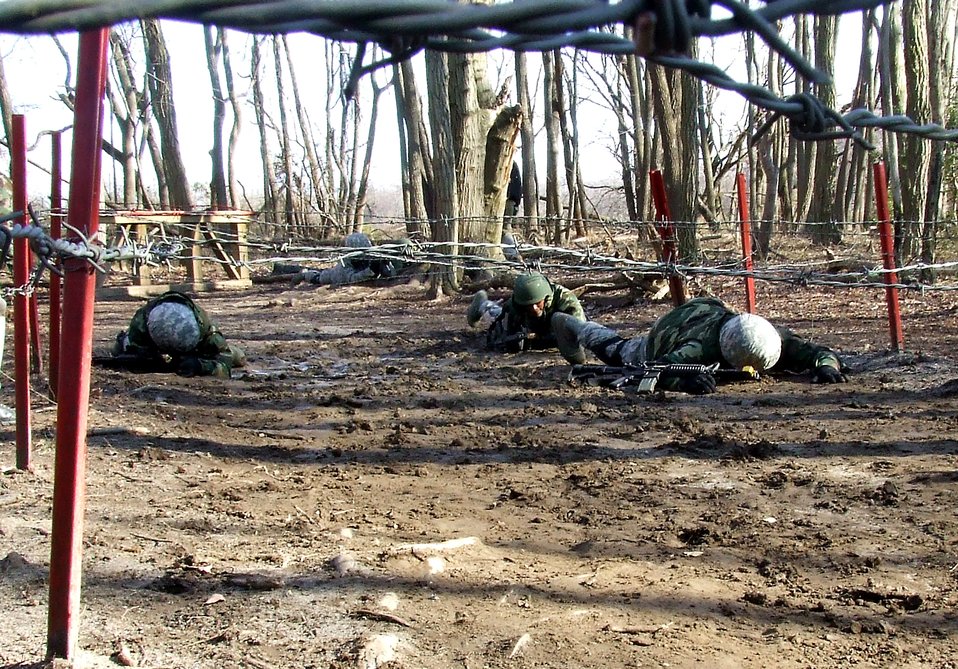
Here's mud in your eye

Students go through the combat obstacle course Feb. 29 as part of air adviser training at the U.S. Air Force Expeditionary Center at Fort Dix, N.J. The course is the first of its kind and prepares Airmen deploying to Afghanistan and Iraq to train military forces in those countries.